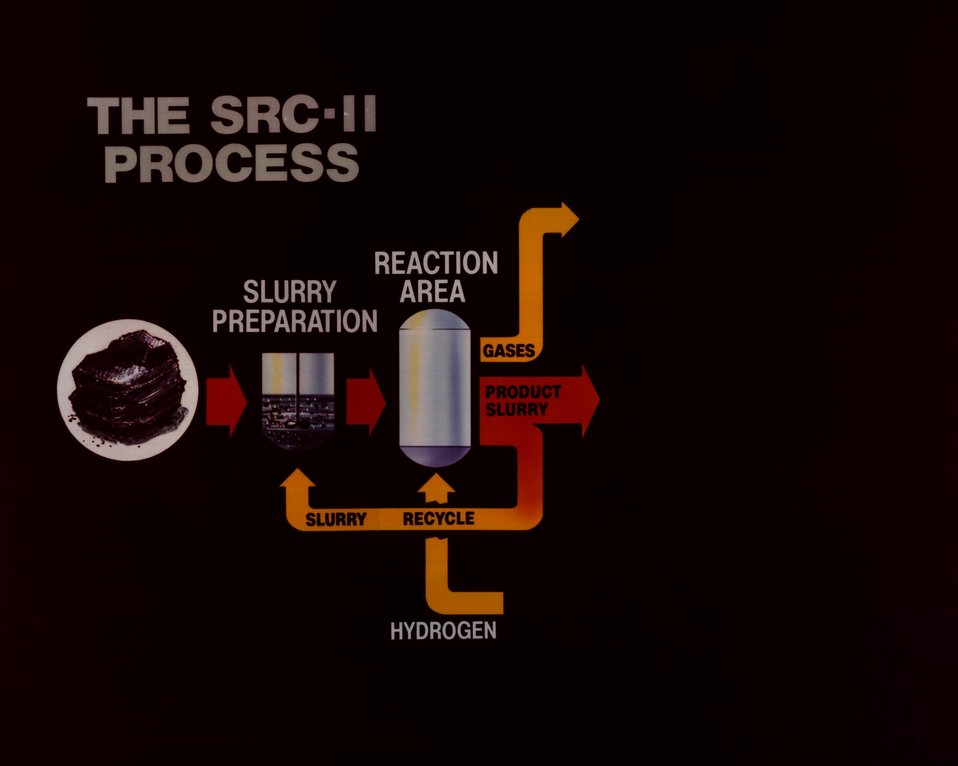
CONSTRUCTION PROGRESS ON THE CATALYTIC COAL GASIFICATION PROCESS DEVELOPMENT UNIT.